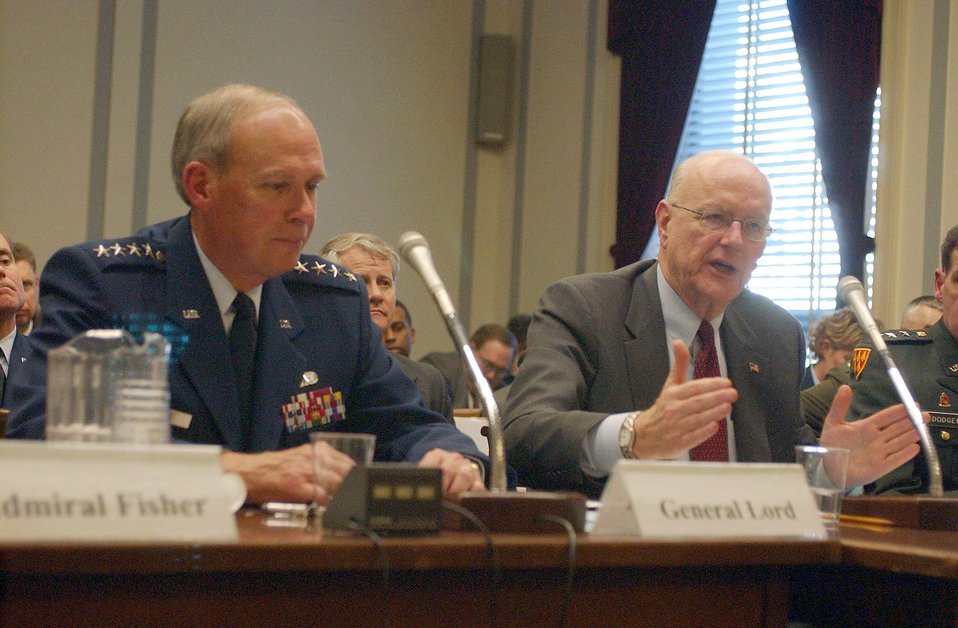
Teets talks space program

WASHINGTON -- Gen. Lance Lord (left), commander of Air Force Space Command, and Peter B. Teets, undersecretary of the Air Force and director of the National Reconnaissance Office, testified at the House Armed Services Committee subcommittee on strategic forces. Mr. Teets outlined his five priorities for the national space effort in 2004.